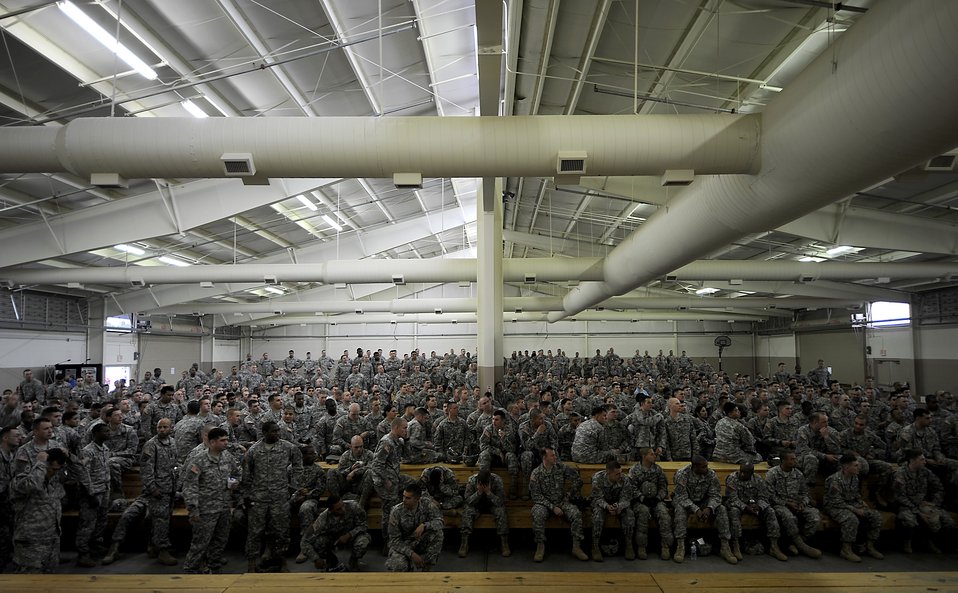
Operation Toy Drop

Soldiers from the 82nd Airborne Division from Fort Bragg, N.C., listen for their lottery number to be called for a chance to jump and earn foreign jump wings after donating a toy Dec. 5 during Operation Toy Drop at Pope Air Force Base, NC. Operation Toy Drop is an annual Airborne jump at Fort Bragg in its 11th year hosted by the Army Civil Affairs and Psychological Operations Command (Airborne), and supported by Fort Bragg's XVIII Airborne Corps and the Air Force Reserve Command's 440th Airlift Wing at Pope AFB that gives Soldiers and Airmen the opportunity to help local families in need over the holidays while boosting morale and incorporating valuable training. More than 3,000 Soldiers donated a toy for a lottery ticket and the chance to jump under a foreign jumpmaster, earning them their foreign jump wings. This year, German and Irish jumpmasters will be issuing the commands from C-130 Hercules aircraft during the operation.